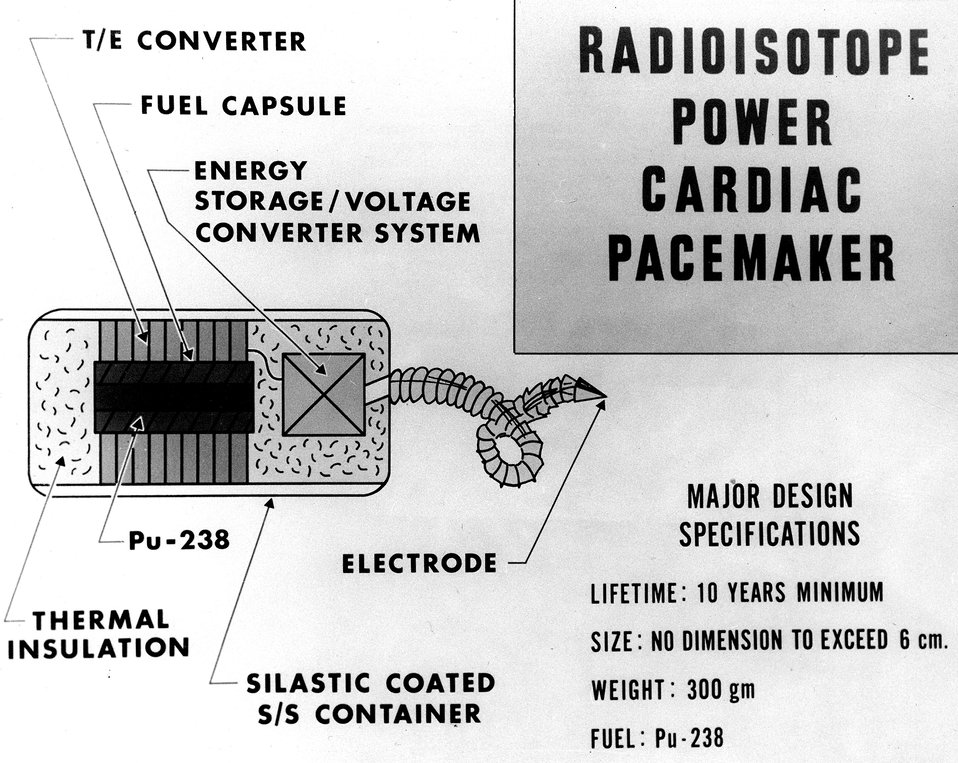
This radioisotope-powered cardiac pacemaker being developed by the Atomic Energy Commission, is planned to stimulate the pulsing action of a malfunctioning heart. Circa 1967.